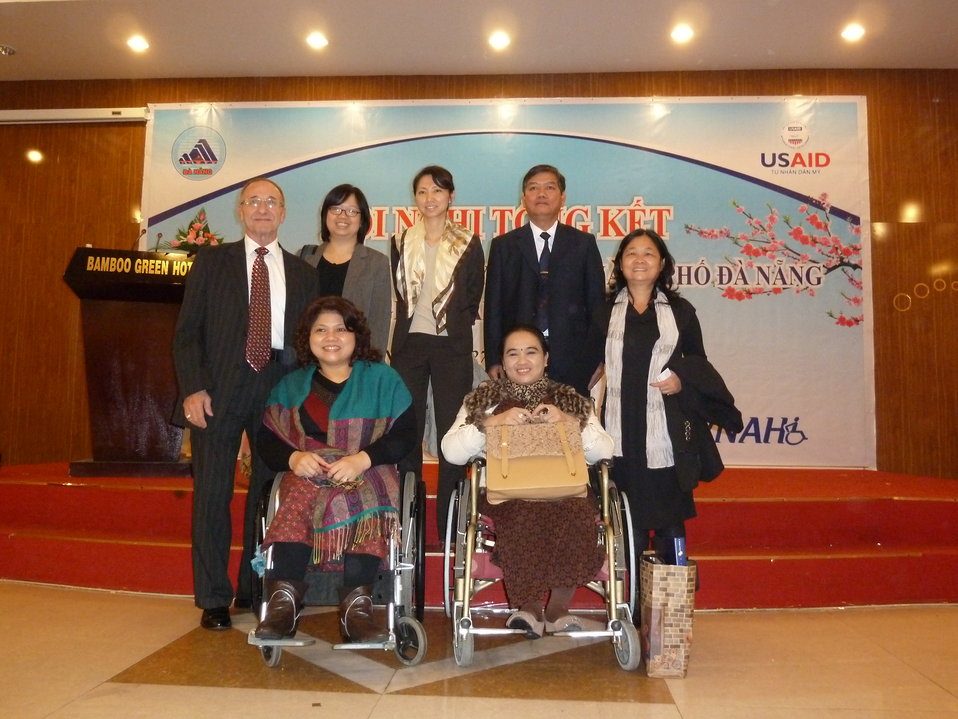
Danang Disability Workshop

Close out workshop of three-year USAID program in disabilities, Danang